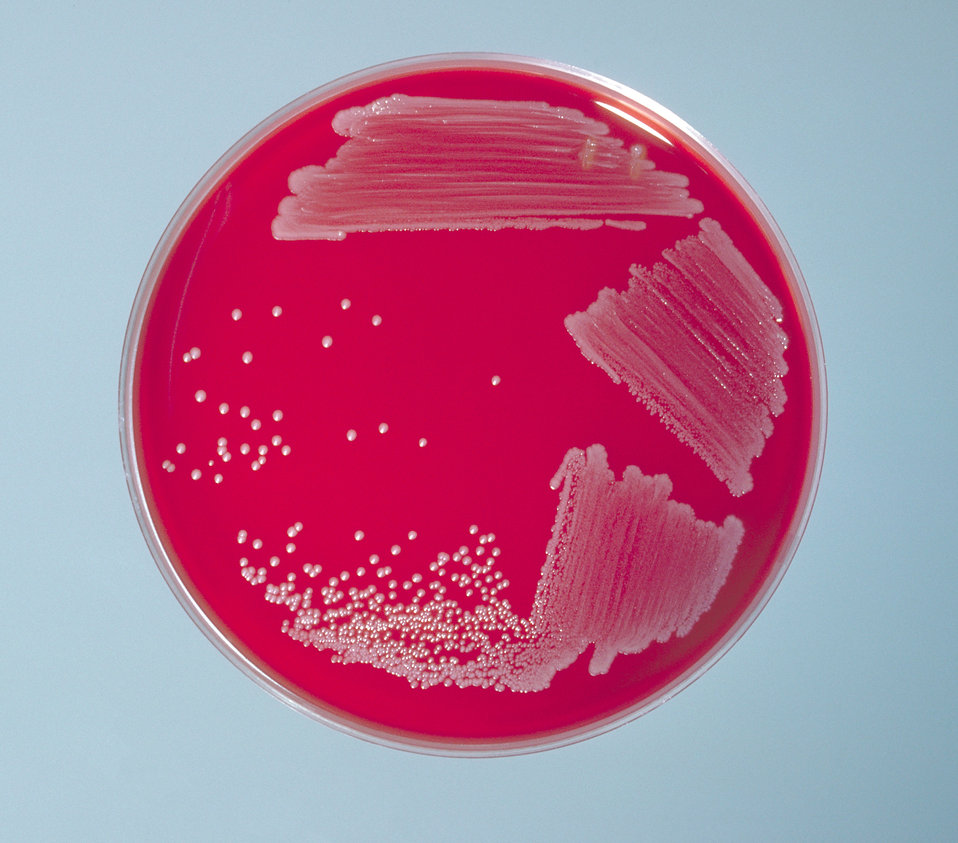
Blood agar plate culture of Corynebacterium diphtheriae (gravis), smooth.